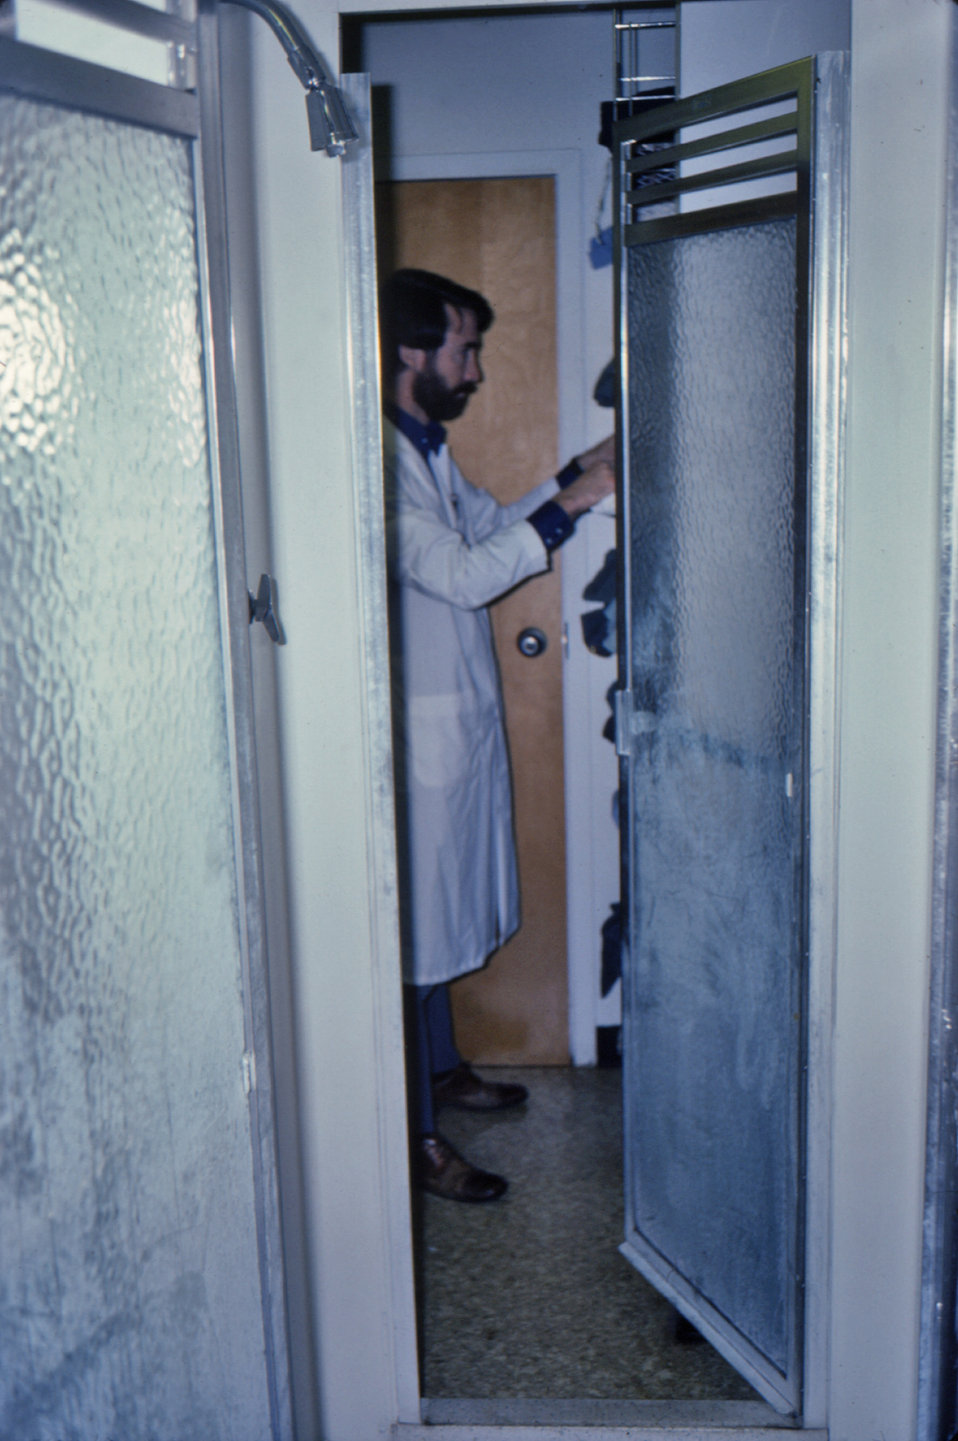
Looking through a shower stall located at the entrance to the CDC's first maximum containment laboratory, this 1975 photograph depicted CDC laboratorian James V. Lang going through supplies.